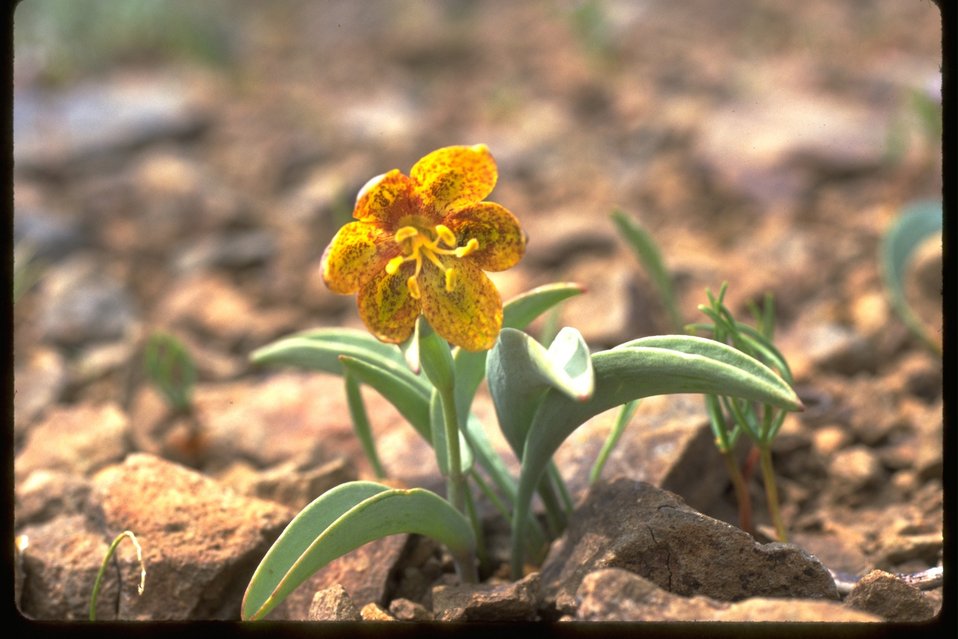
A Fritillaria glauca at Quarry Baldy Creek on Lone Pine Ridge.